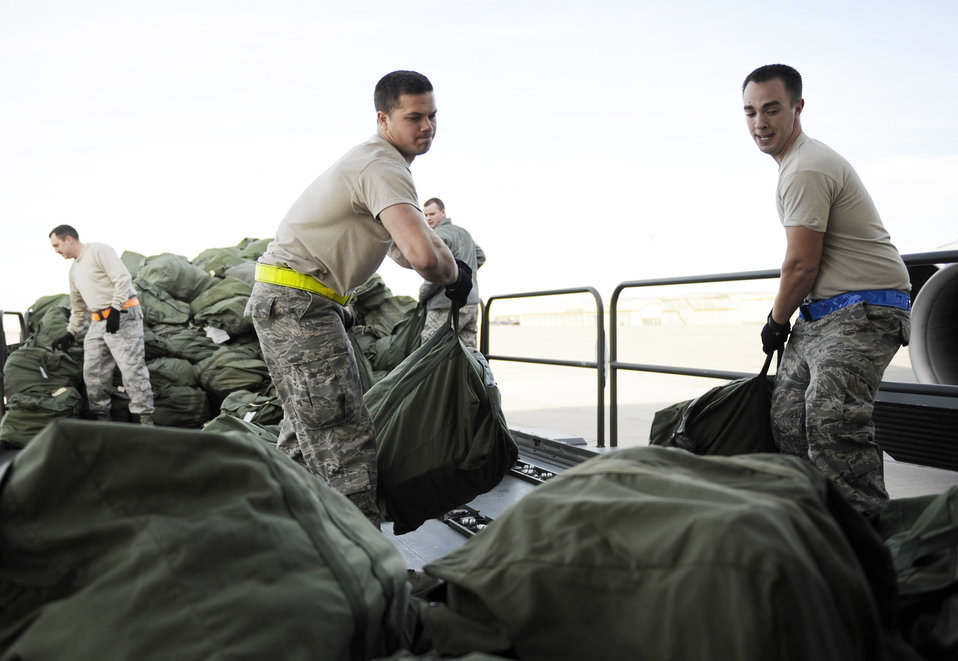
Squadron goes to South Korea

Airmen from the 726th Air Control Squadron load mobility bags before the 391st Fighter Squadron at Mountain Home Air Force Base, Idaho, deploys to South Korea, Jan. 18, 2010. The deployed Airmen will work alongside alliance partners to maintain peace and stability in the region.